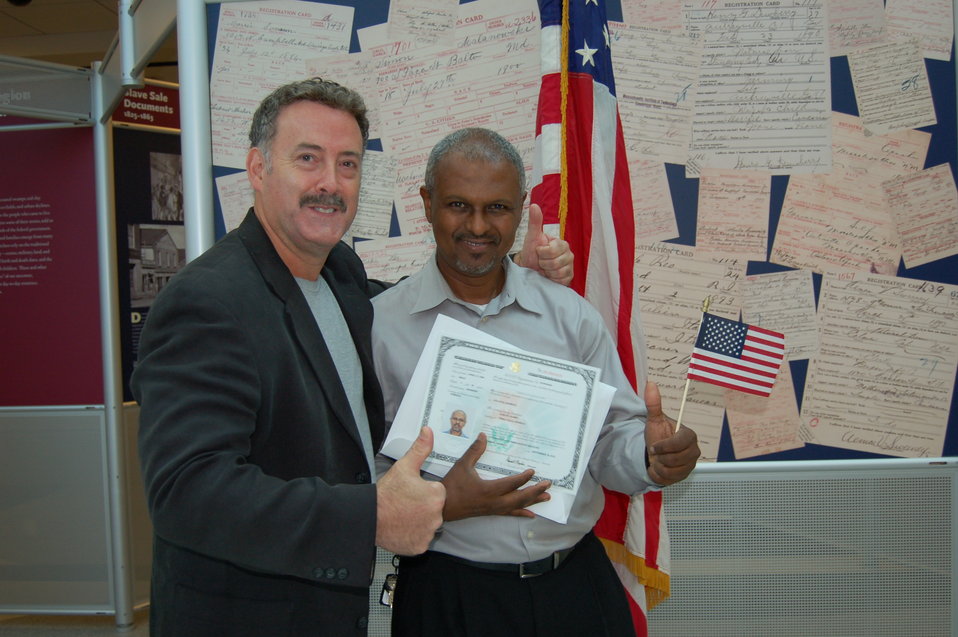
New Citizens